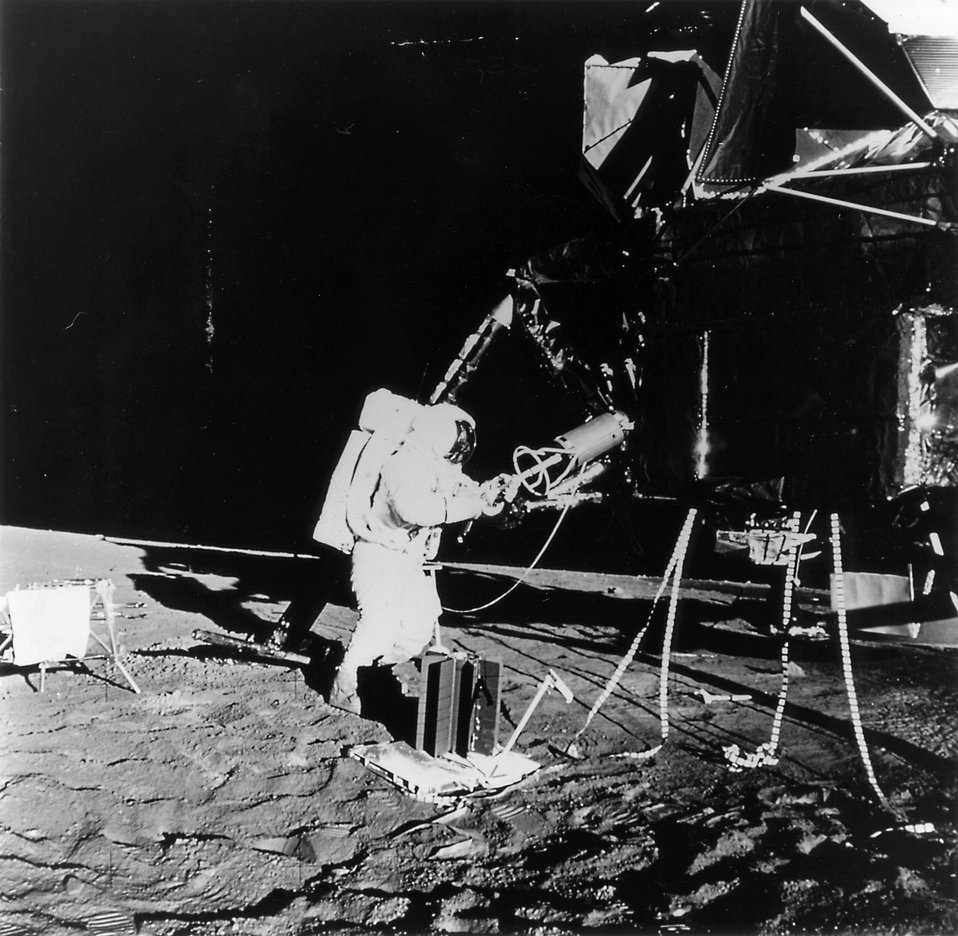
Astronaut at Quadrant II on descent stage -- U.S. second lunar landing mission produced these fantastic moon pictures. Circa 1977.